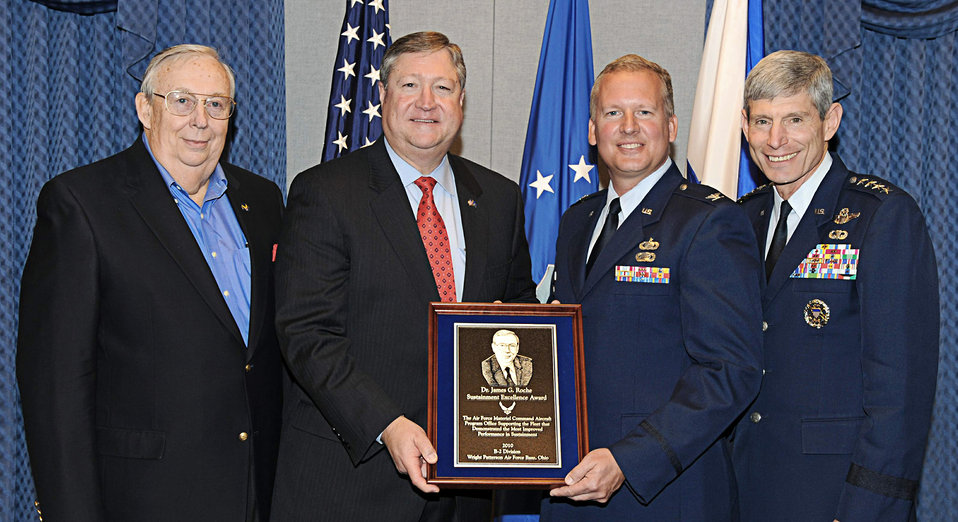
Dr. James G. Roche award

From left, former Secretary of the Air Force Dr. James G. Roche; current Secretary of the Air Force Michael B. Donley; Col. Mark Williams, Chief of the
B-2 Division at Wright-Patterson Air Force Base, Ohio; and Air Force Chief of Staff Gen. Norton Schwartz pose for a photograph following the 2010 Dr. James G. Roche Sustainment Excellence Award ceremony at the Pentagon on April 11, 2011. Colonel Williams represented all the members of the B-2 Spirit division, which won the award for demonstrating the most improved performance in aircraft maintenance and logistics readiness.